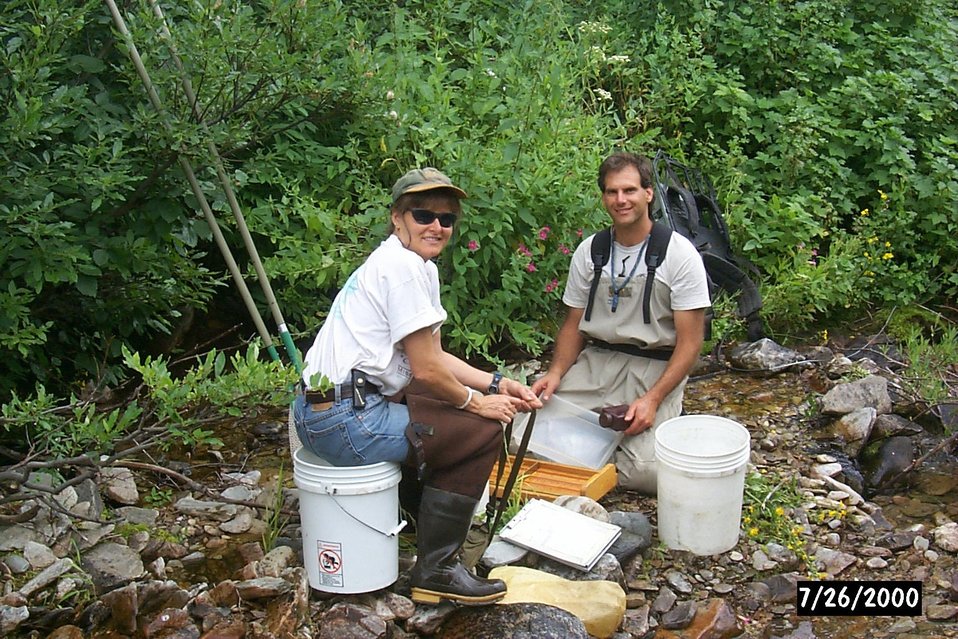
People Salmon Field Office UCSC Upper Columbia Salmon Clearwater District